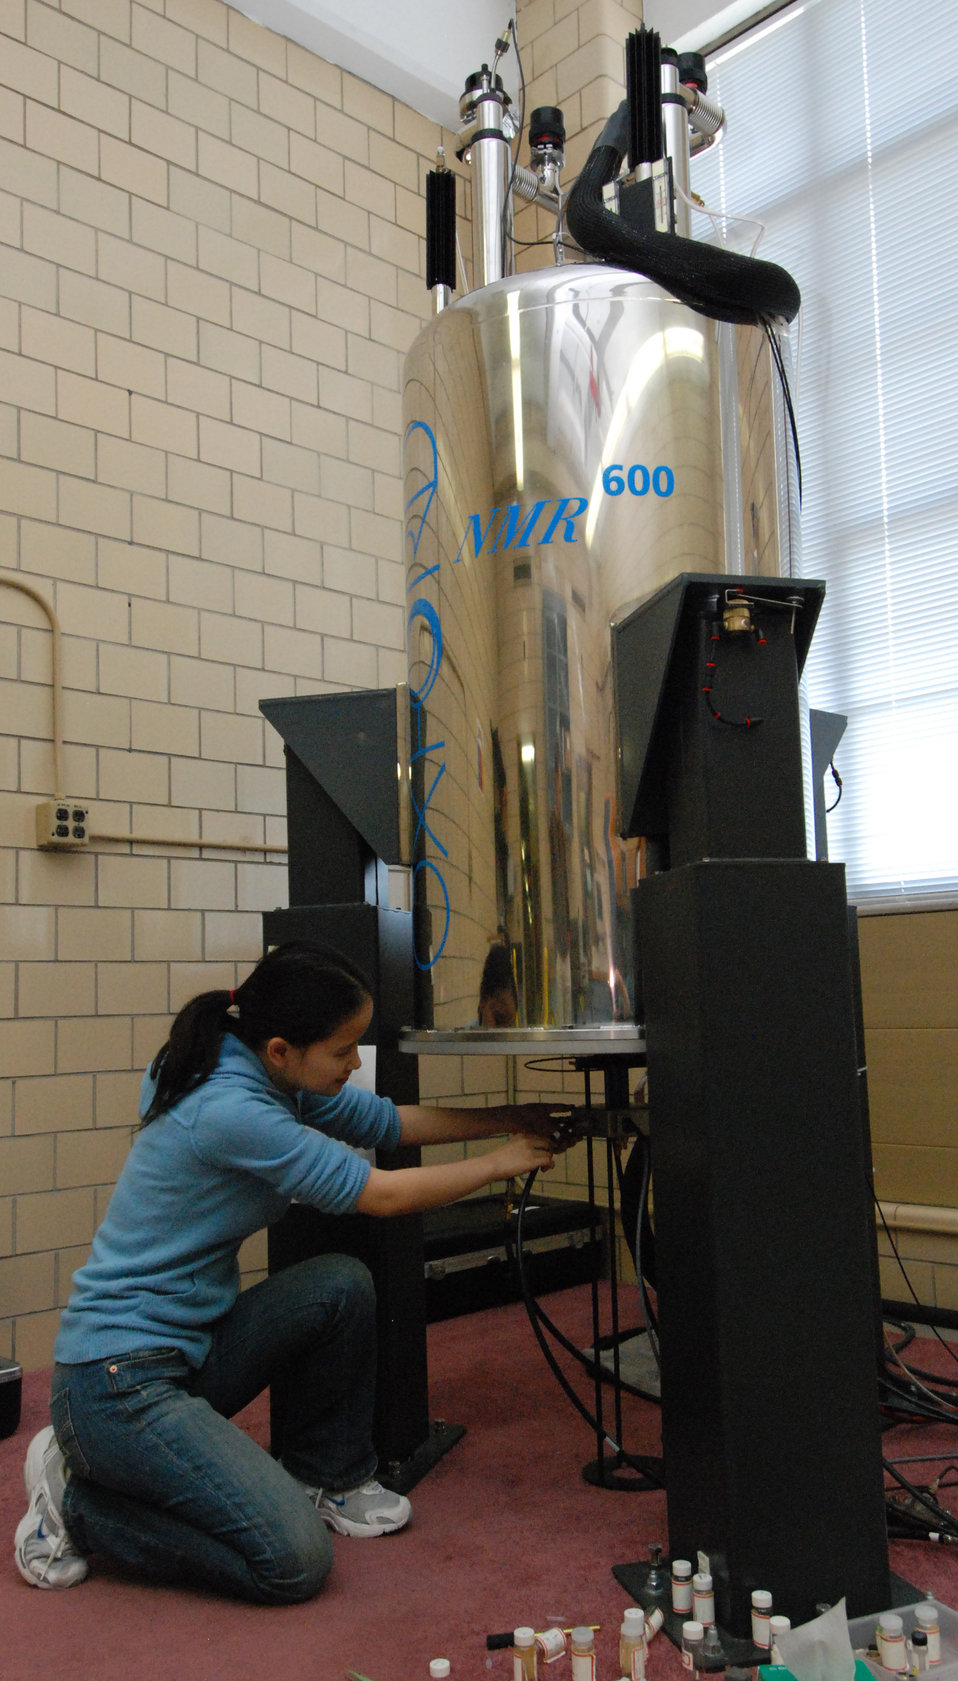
OXFORD NUCLEAR MAGNETIC RESONANCE (NMR) EQUIPMENT USED BY A RESEARCH GROUP AT AMES LABORATORY.

Ames Laboratory is a research lab for the Department of Energy that seeks solution to energy related problems through the exploration of chemical, engineering, materials, mathematical and physical.